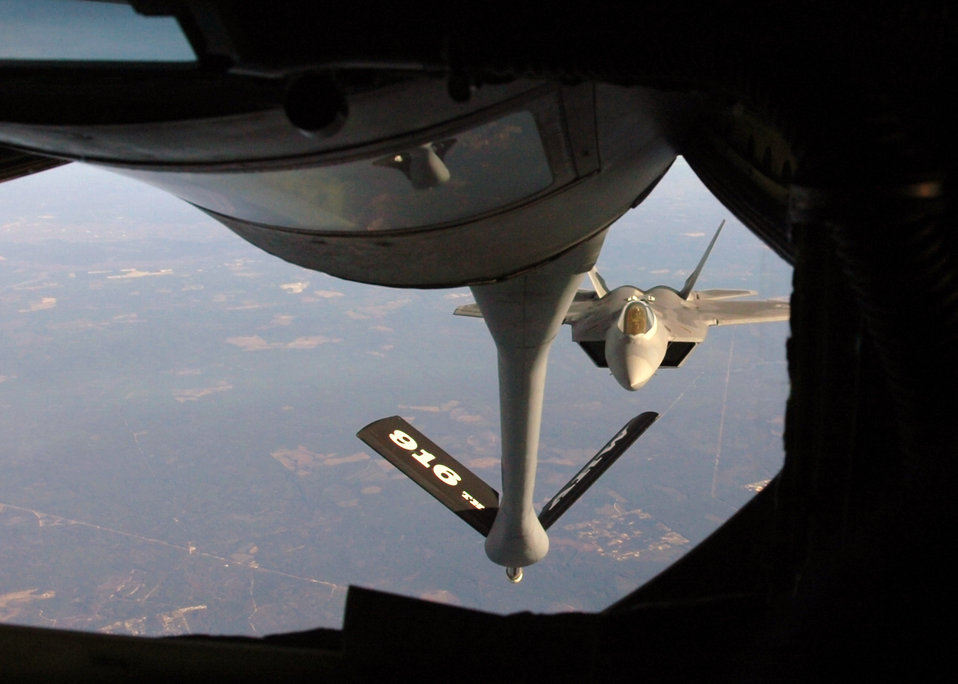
Feeding the Raptor

An F-22 Raptor lines up with a KC-135 Stratotanker during an air-to-air refueling training mission Dec. 4 over Eglin Air Force Base, Fla. The F-22 is from the 43rd Fighter Squadron at Tyndall AFB, Fla. The KC-135 is from the 916th Air Refueling Wing, an Air Force Reserve wing located at Seymour Johnson AFB, N.C.